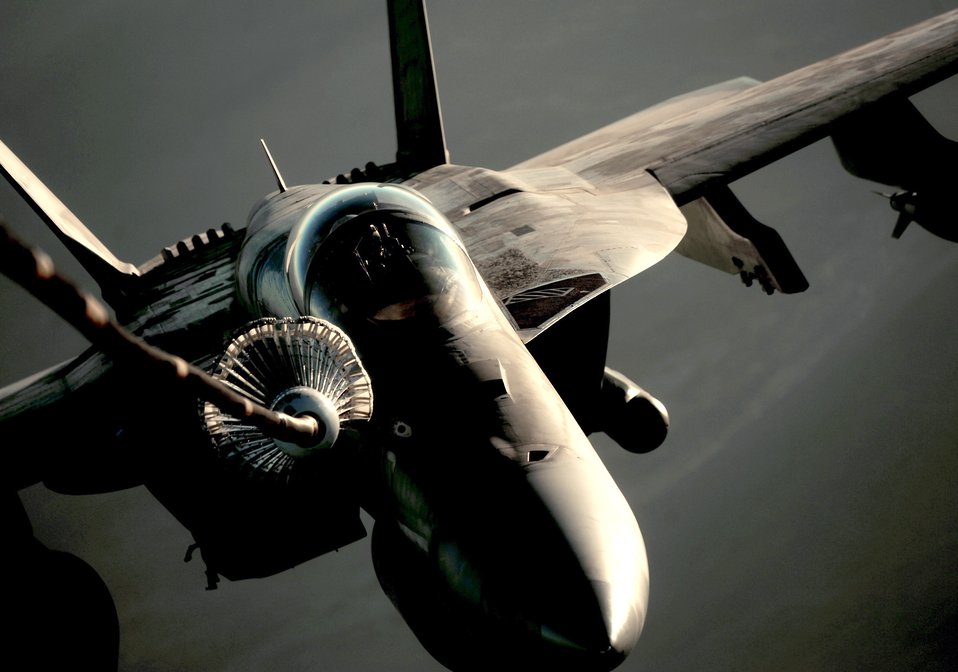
Refueling the joint fight

A U.S. Navy F/A-18 Hornet pilot positions the aircraft for refueling from a KC-10 Extender Nov. 25, 2010, over Southwest Asia. The KC-10 is with the 908th Expeditionary Air Refueling Squadron.